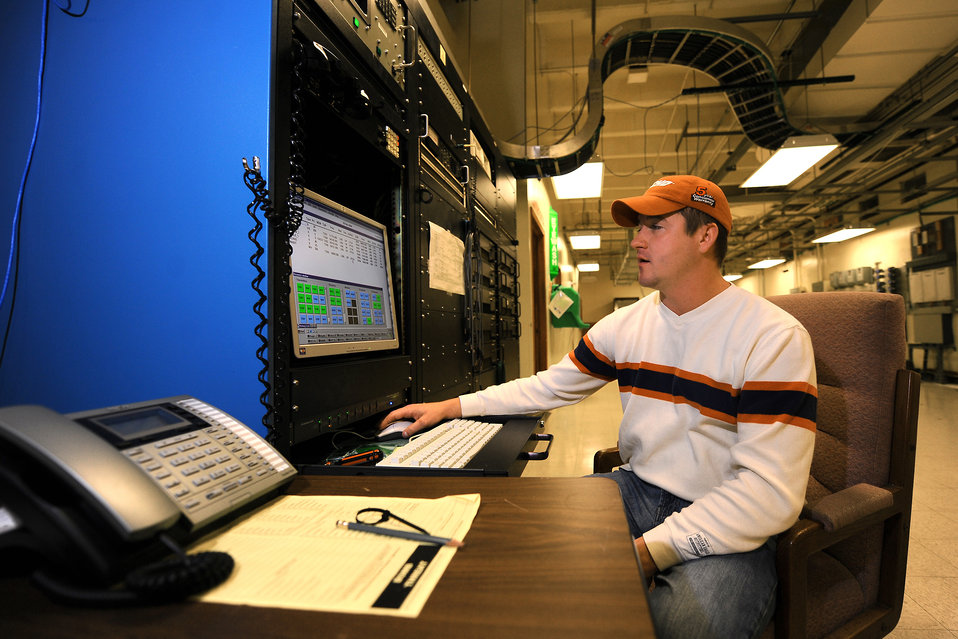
Rural communications site has global mission

Brady Bach monitors the antennas at the Elkhorn and Scribner Communication sites Nov. 5, 2009, from a detached facility located near Elkhorn, Neb. Mr. Bach is a telecommunications specialist with the 55th Strategic Communications Squadron from Offutt Air Force Base, Neb.